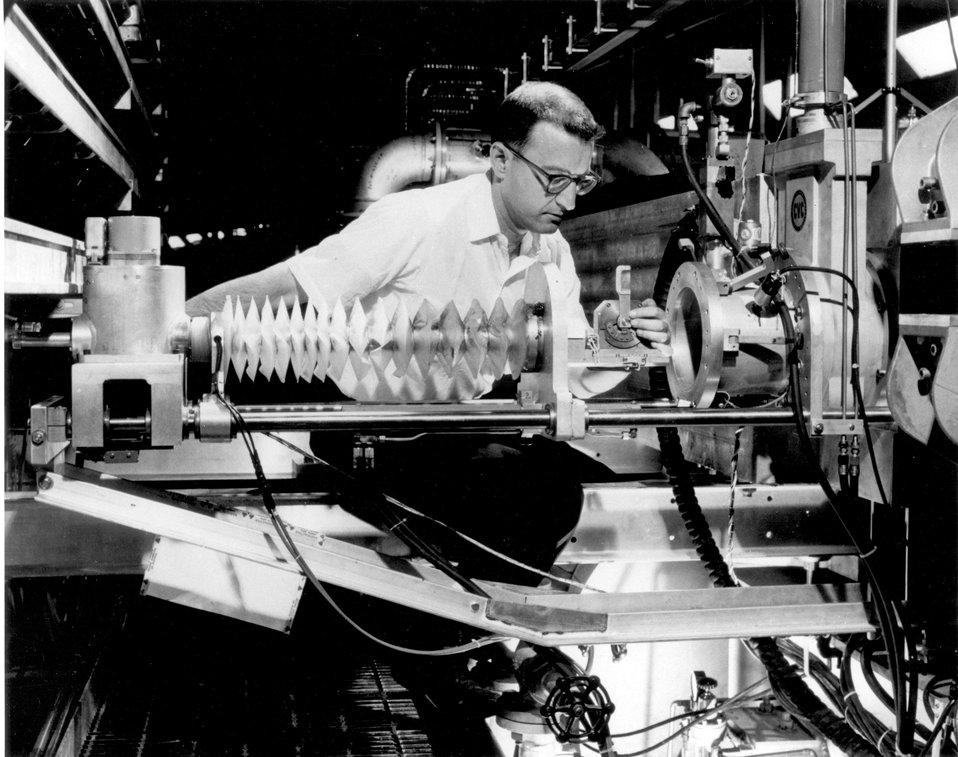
Chemist placing a copper target in the Alternating Gradient Synchrotron for proton bombardment, in studies on the reactions between high energy nuclear particles and complex nuclei. c. 1967